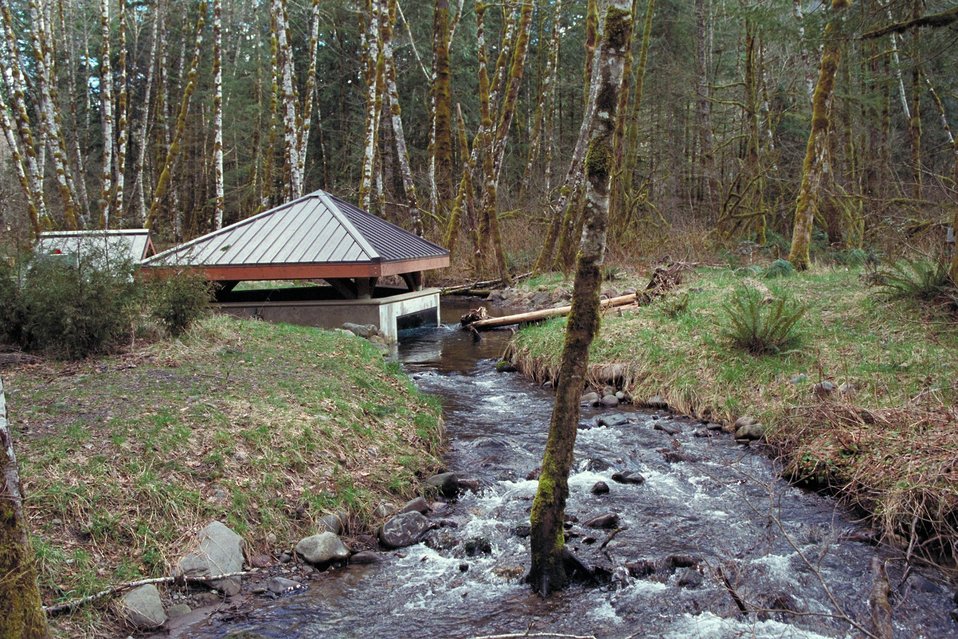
Cascade Stream Watch is an environmental education program conducted at BLM's Wildwood Recreation site.